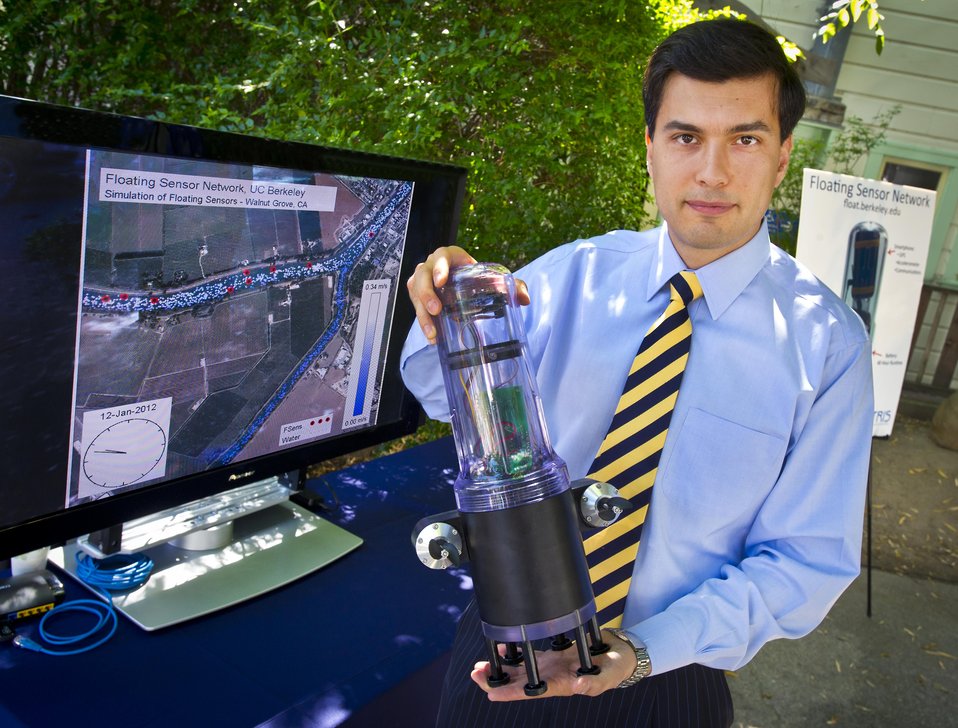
The Center for Information Technology Research in the Interest of Society (CITRIS), Berkeley Lab and its National Energy Research Scientific Computing Center (NERSC), and UC Berkeley's Department of Civil and Environmental Engineering and Department of Electrical Engineering are collaborating to conduct an unprecedented experiment in the area of hydrodynamic monitoring to advance our understanding of water conditions in the Delta. Understanding how the water flows through the Delta on its way to pumping stations and San Francisco Bay is imperative to balance conflicting demands on this critical resource.